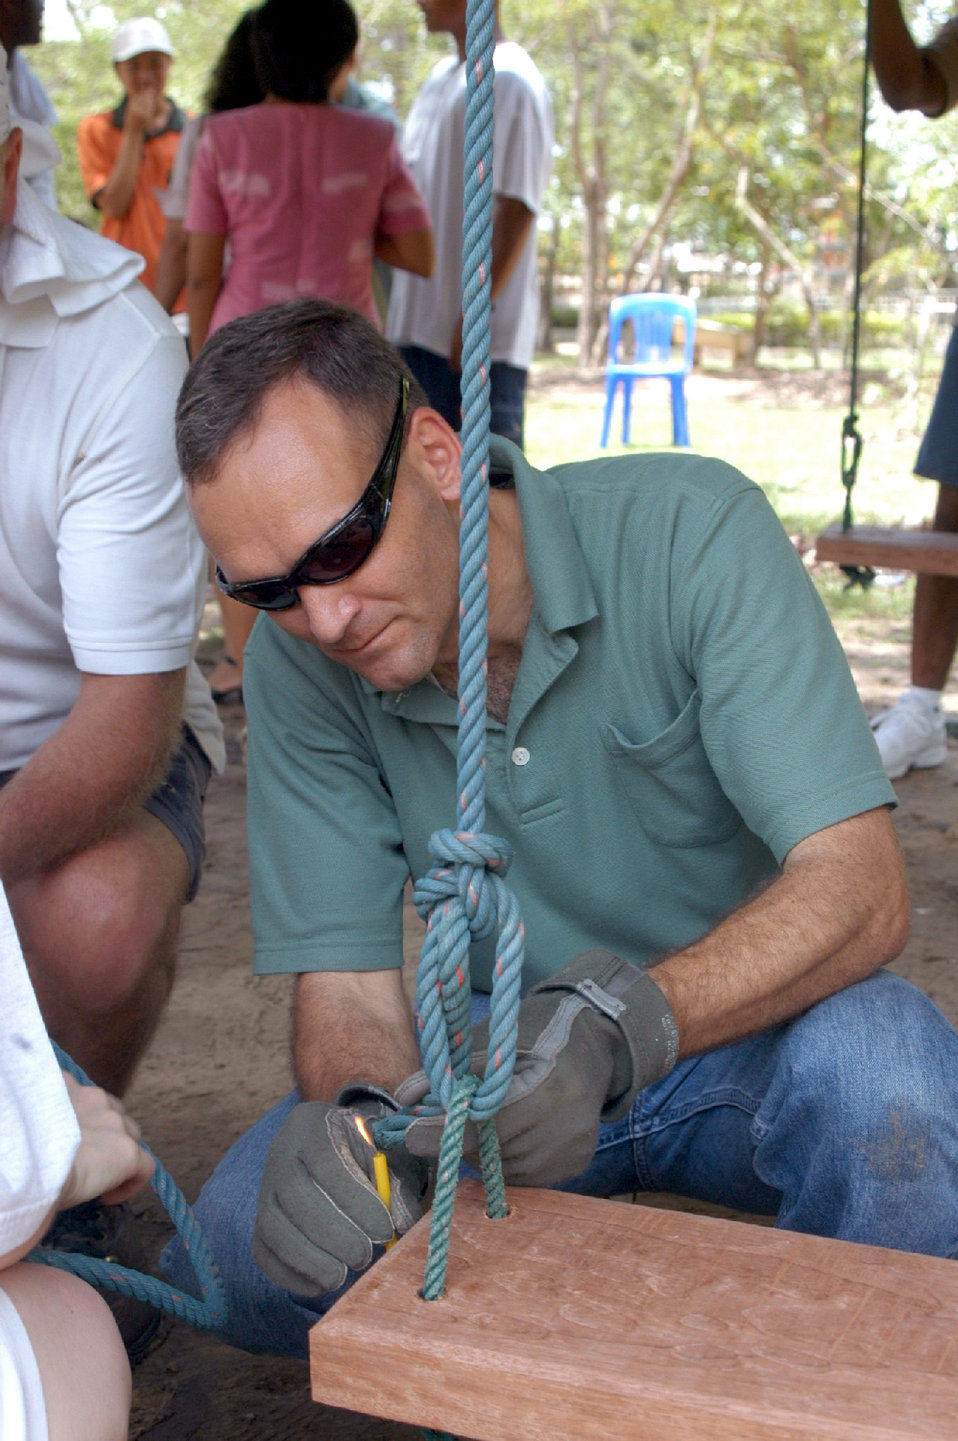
Airmen help rural Thai preschool

UDORN THANI, Thailand -- Chaplain (Capt.) Kleet Barclay sears the end of a rope on the new swing set at a preschool near here. Airmen from the 353rd Special Operations Group from Kadena Air Base, Japan, visited the preschool to donate supplies and improve the students' playground.